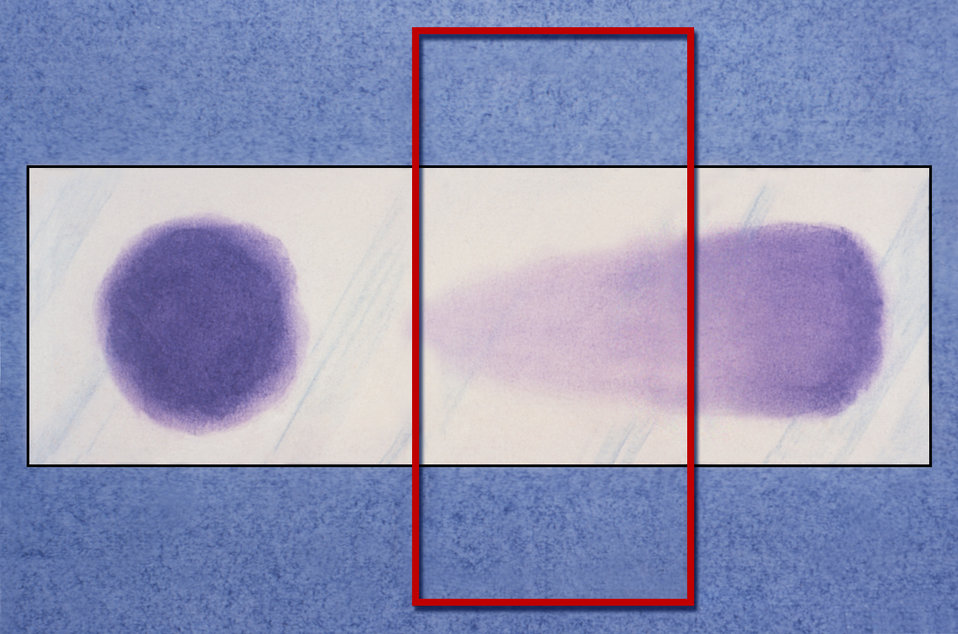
This drawing reveals the appearance of a thick and thin blood smear (boxed), using a Giemsa staining technique.